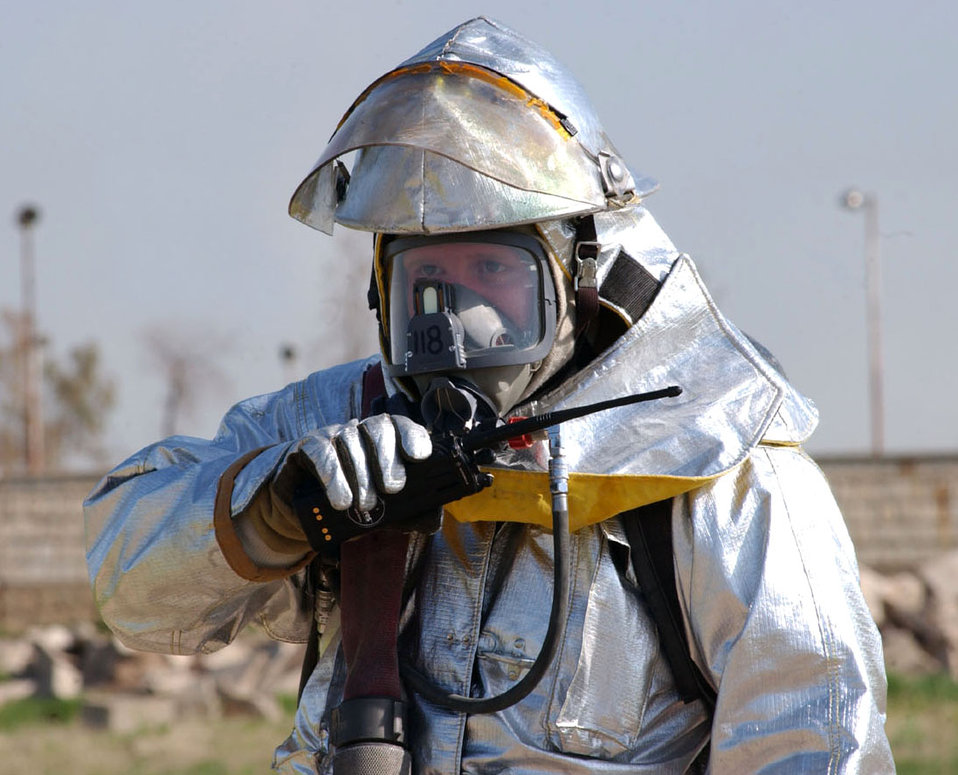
Response teams prepare for chemical, nuclear threats

Staff Sgt. Jimmy Cole keeps in contact with response teams at the site of a suspected chemical lab during an exercise at Kirkuk Air Base, Iraq. Sergeant Cole is a crash truck crew chief with the 506th Expeditionary Civil Engineer Squadron fire department.